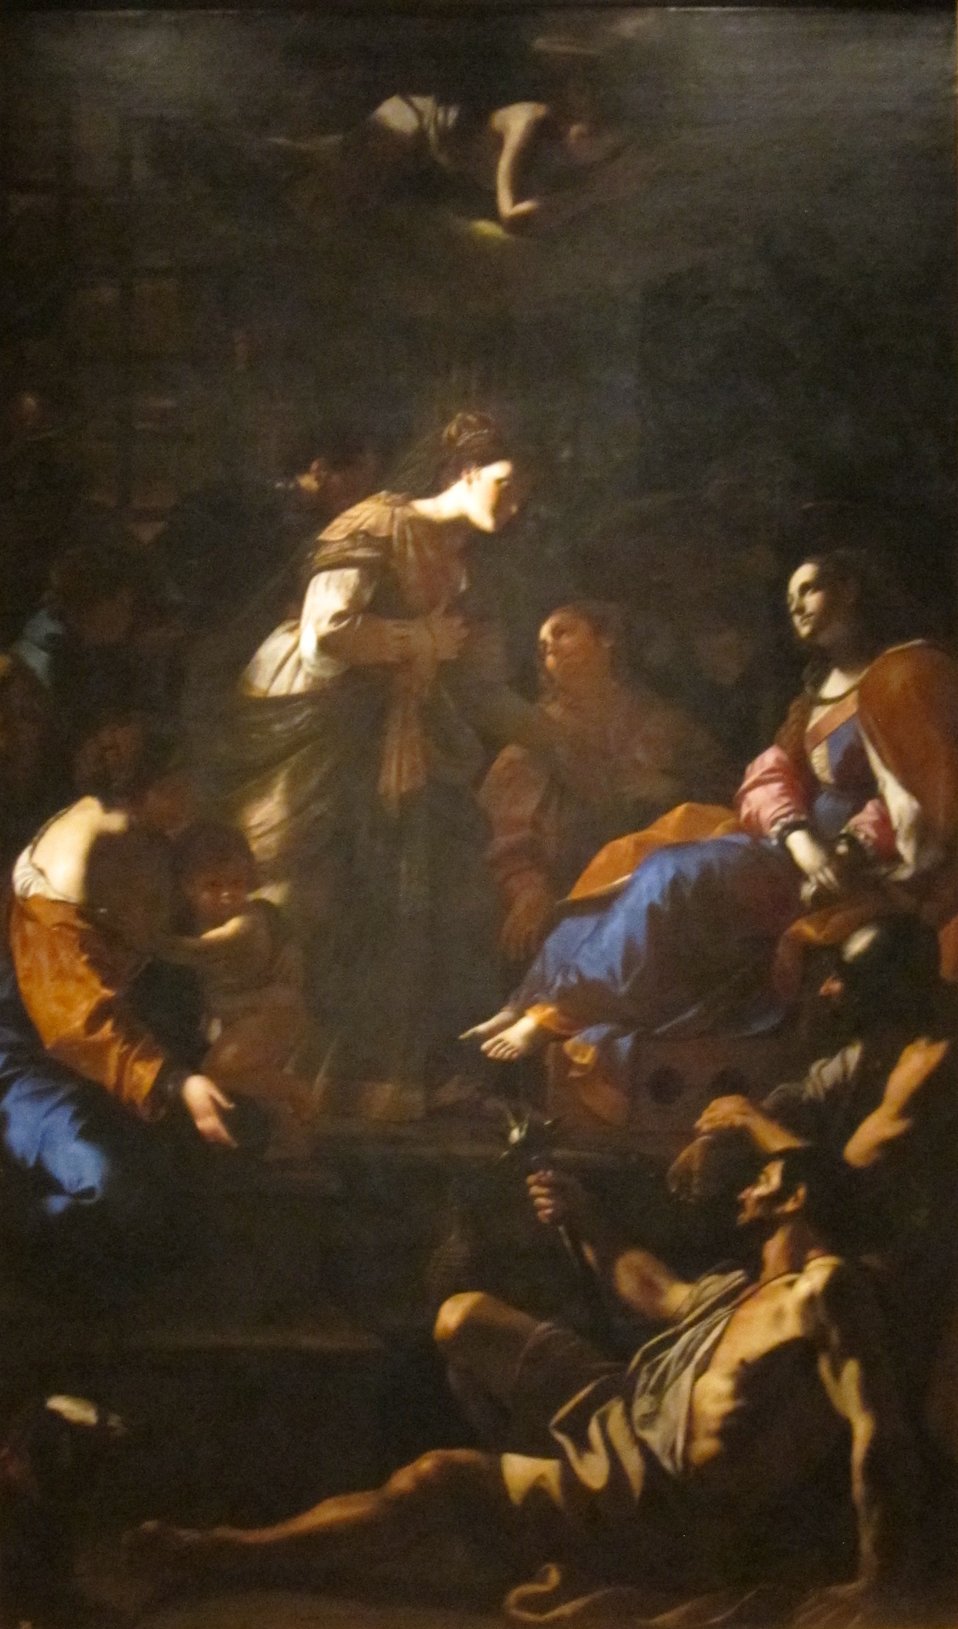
The Roman Empress Faustina Visiting St. Catherine of Alexandria in Prison, oil on canvas painting by Mattia Preti, c. 1640-43, Dayton Art Institute